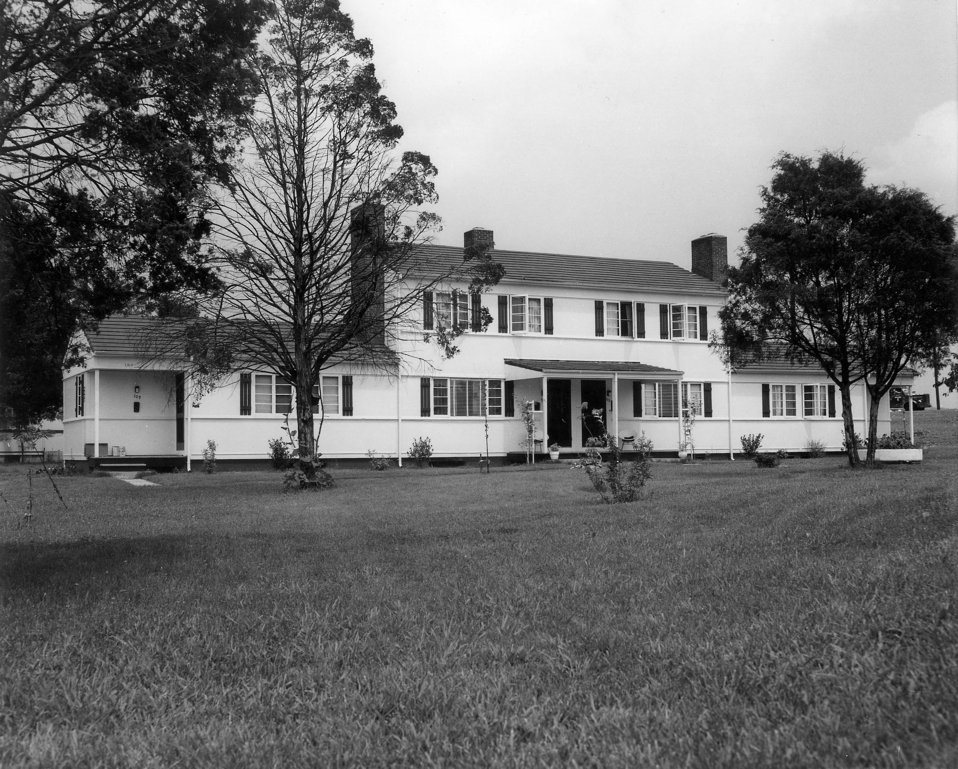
E Apartment Oak Ridge

DOE photo by Ed Westcott Oak Ridge Tennessee

1940s